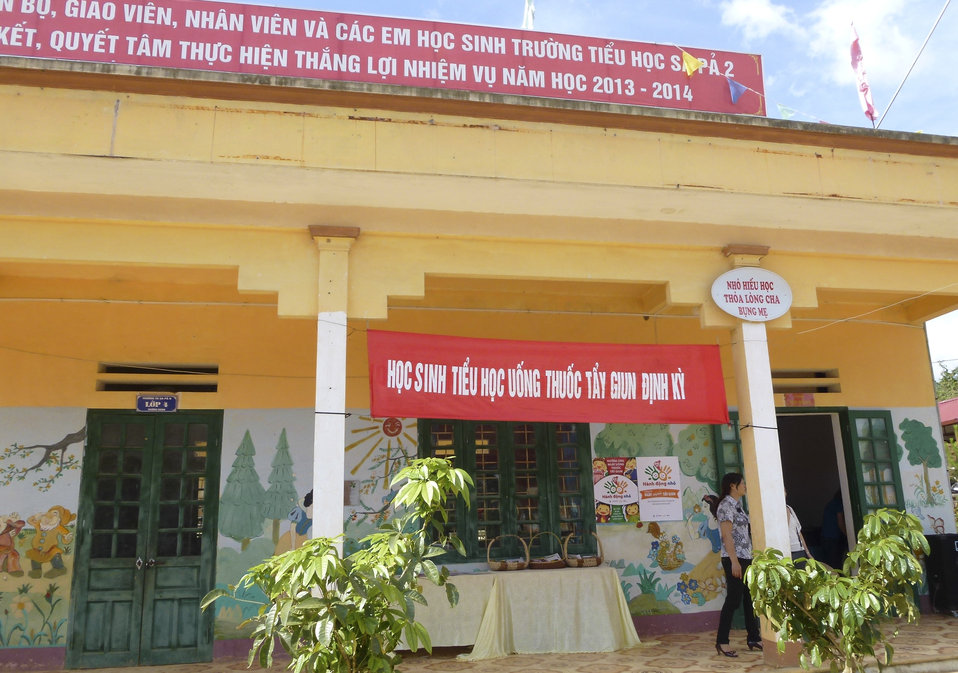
USAID supports deworming medication for school children in Sa Pa district of Lao Cai province

May 13, 2014.